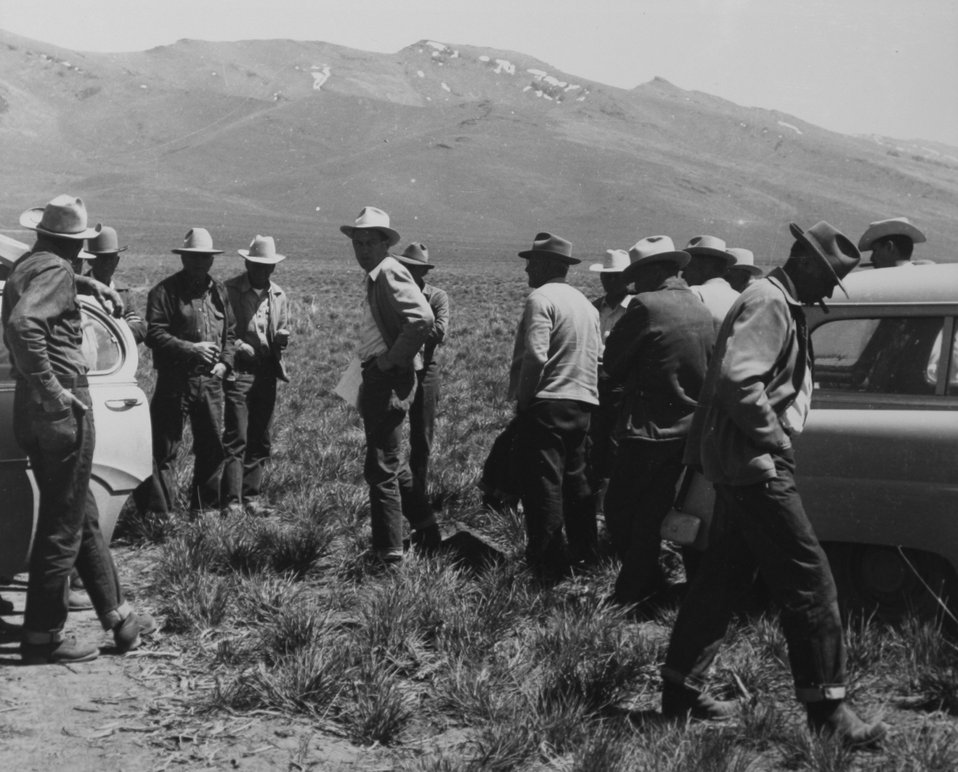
Rangeland tour Rincon Seeding south of Fields with District Manager Howard Delano, June 1955